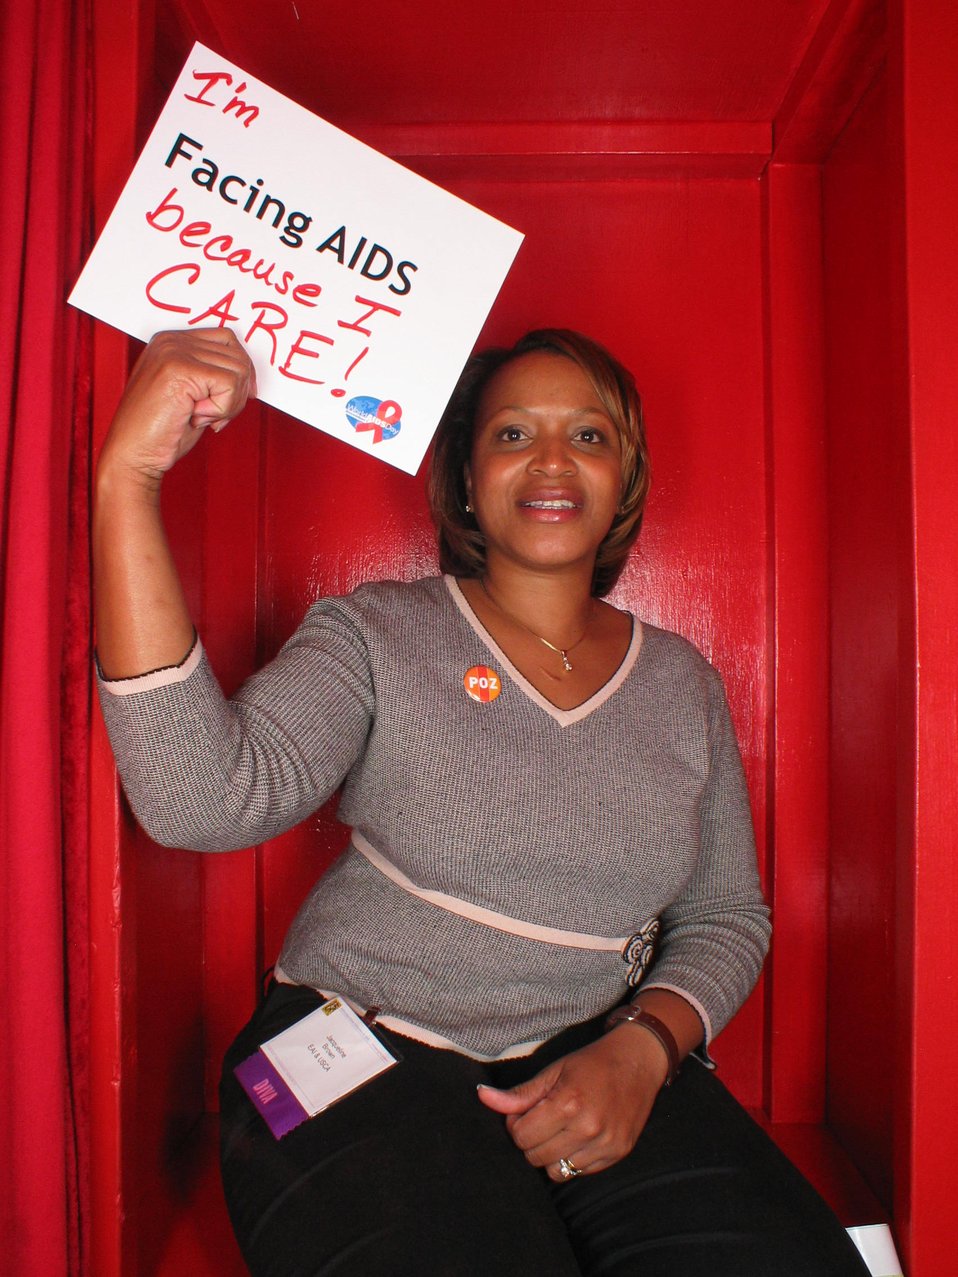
I'm Facing AIDS because I care!